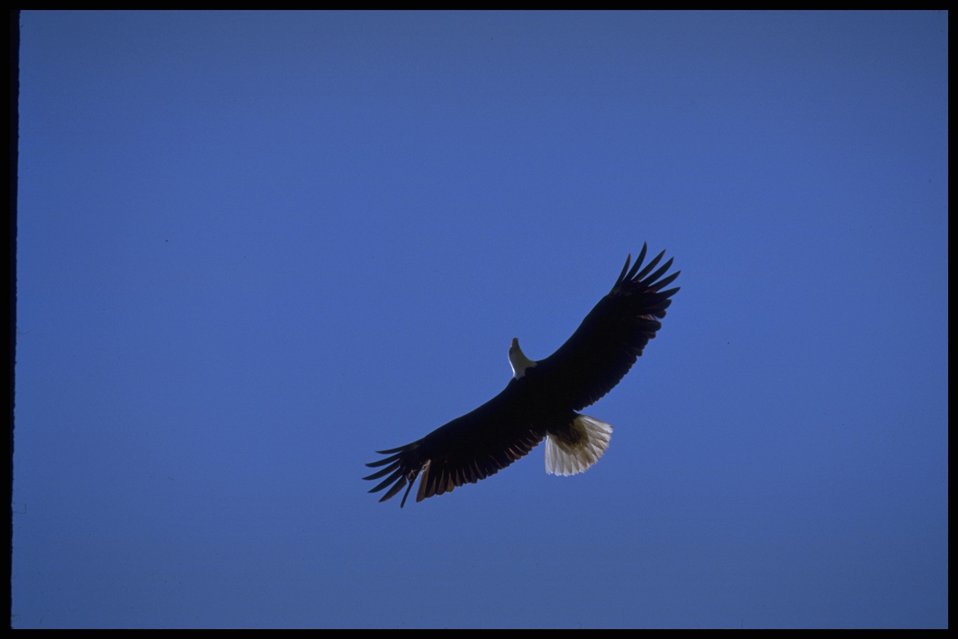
Far shot of Bald Eagle in flight. Lakeview District.